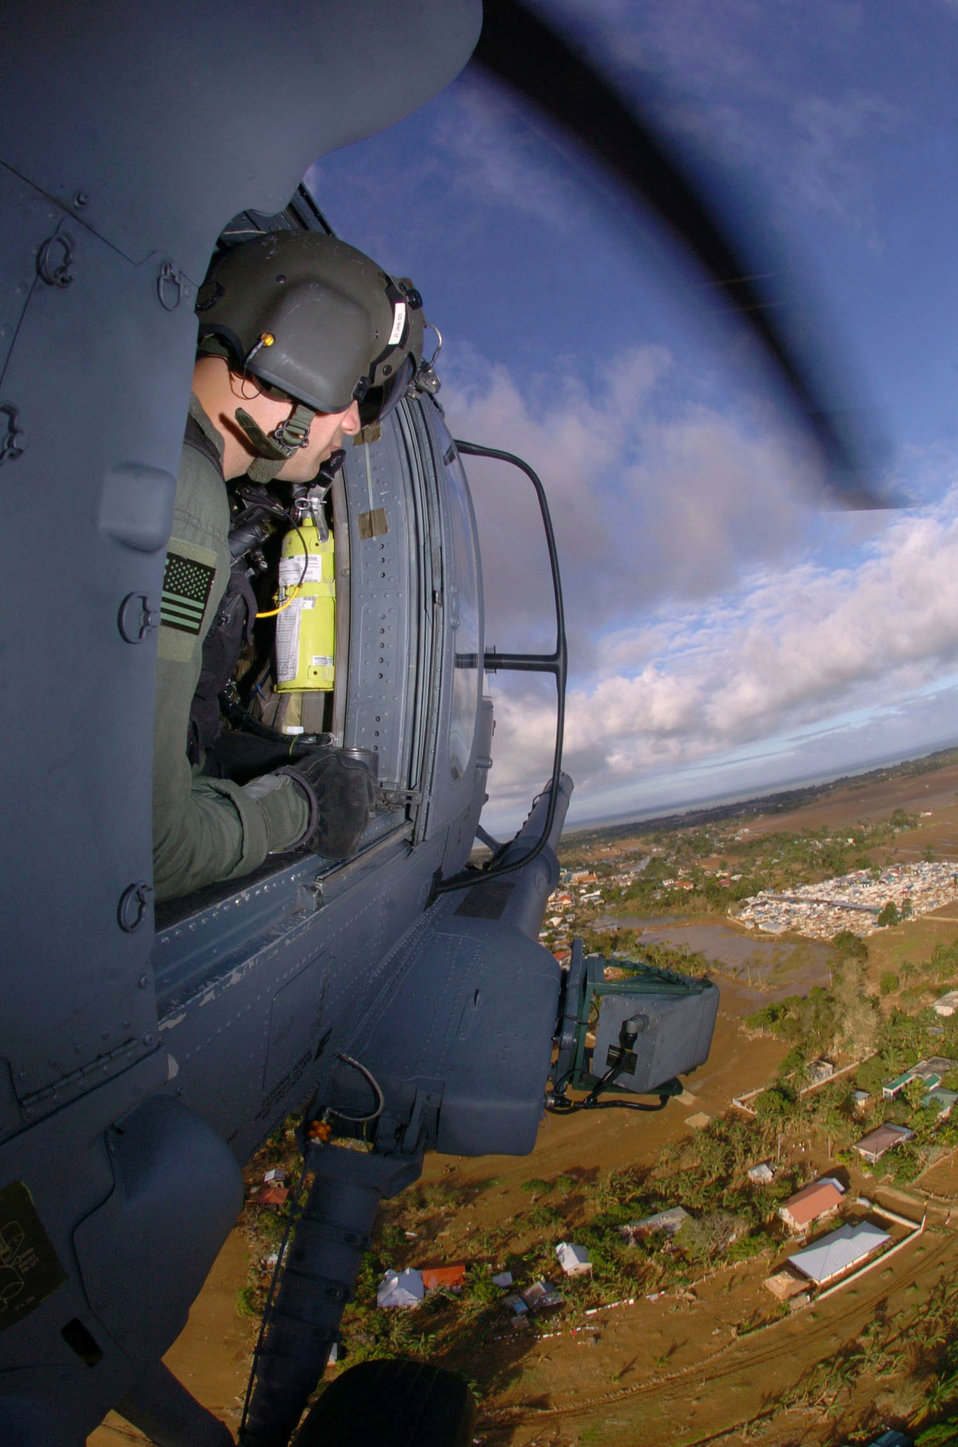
Searching for a place to land

QUEZON PROVINCE, Philippines - Tech. Sgt. James Karmann surveys the landing zone before landing at the town of Real during typhoon relief operations here. The HH-60 Pave Hawk helicopter delivered food and supplies to the distribution center. U.S. Air Force and Marine helicopters have delivered more than 390,000 pounds of relief goods to the stricken areas. Sergeant Karmann is a helicopter flight engineer from the 33rd Rescue Squadron at Kadena Air Base, Japan.